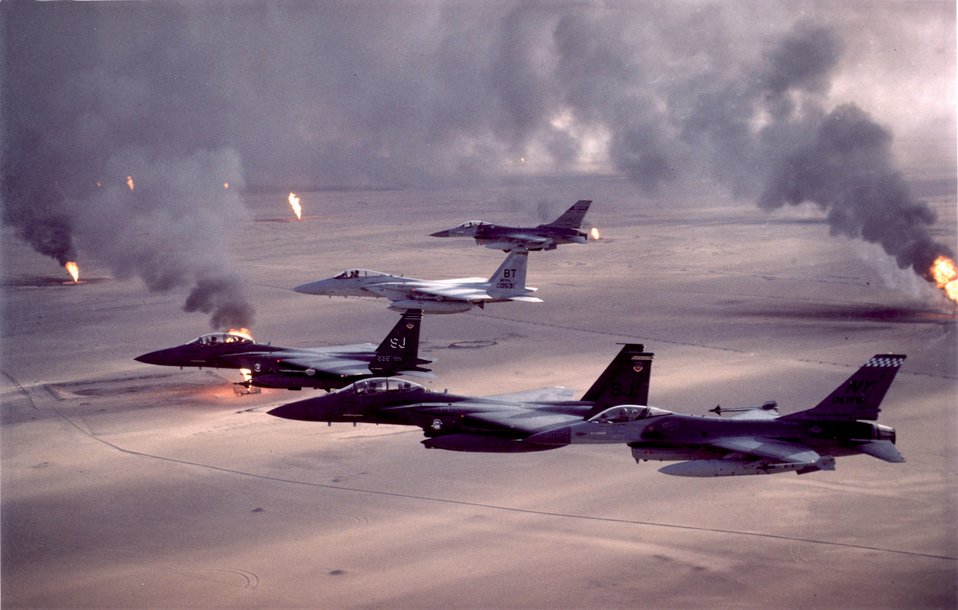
Operation Desert Storm

F-16A Fighting Falcons and F-15C and F-15E Eagles fly over burning oil fields during Desert Storm. Operation Desert Storm began Jan. 17, 1991.